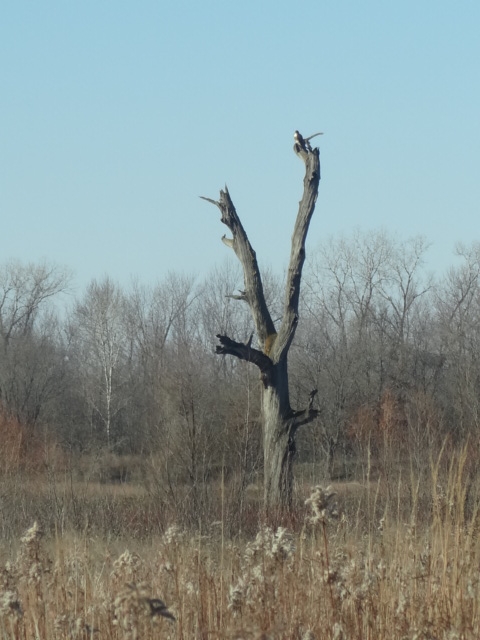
Raptor on Hardwood

Red-tailed hawk perched upon a dead hardwood overlookingTrading Post Pond.